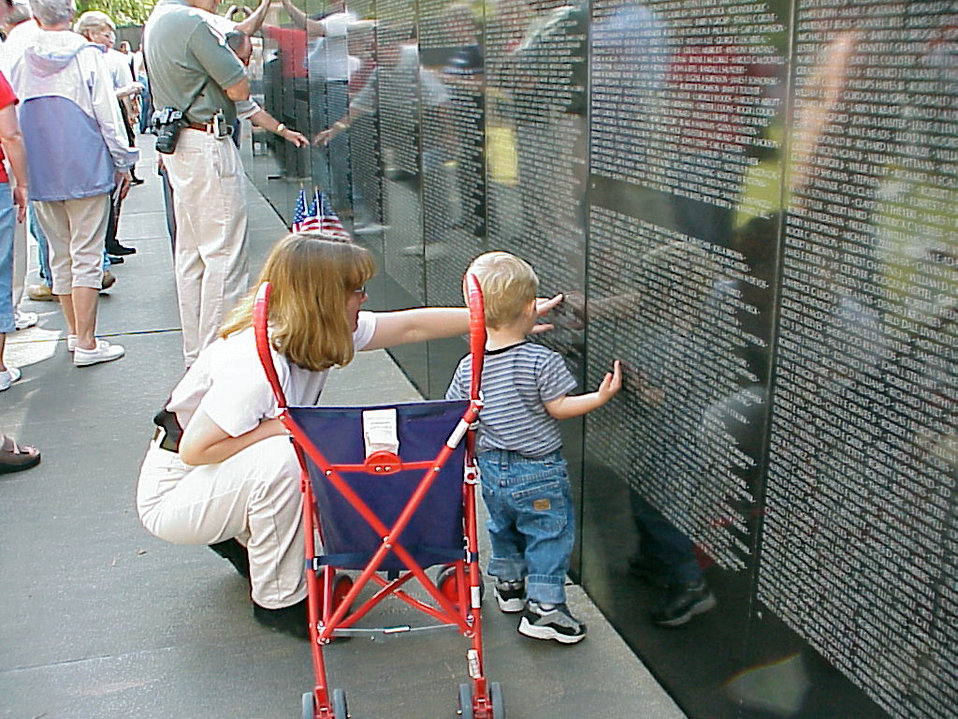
A wall of remembrance

MACON, Ga. -- A mother and son look at names on the Dignity Memorial Vietnam Wall Experience display. The traveling replica of the Vietnam Veterans Memorial in Washington, D.C., was on display here from Oct. 31 through Nov. 2. During its three-day visit, hundreds of people viewed the wall.